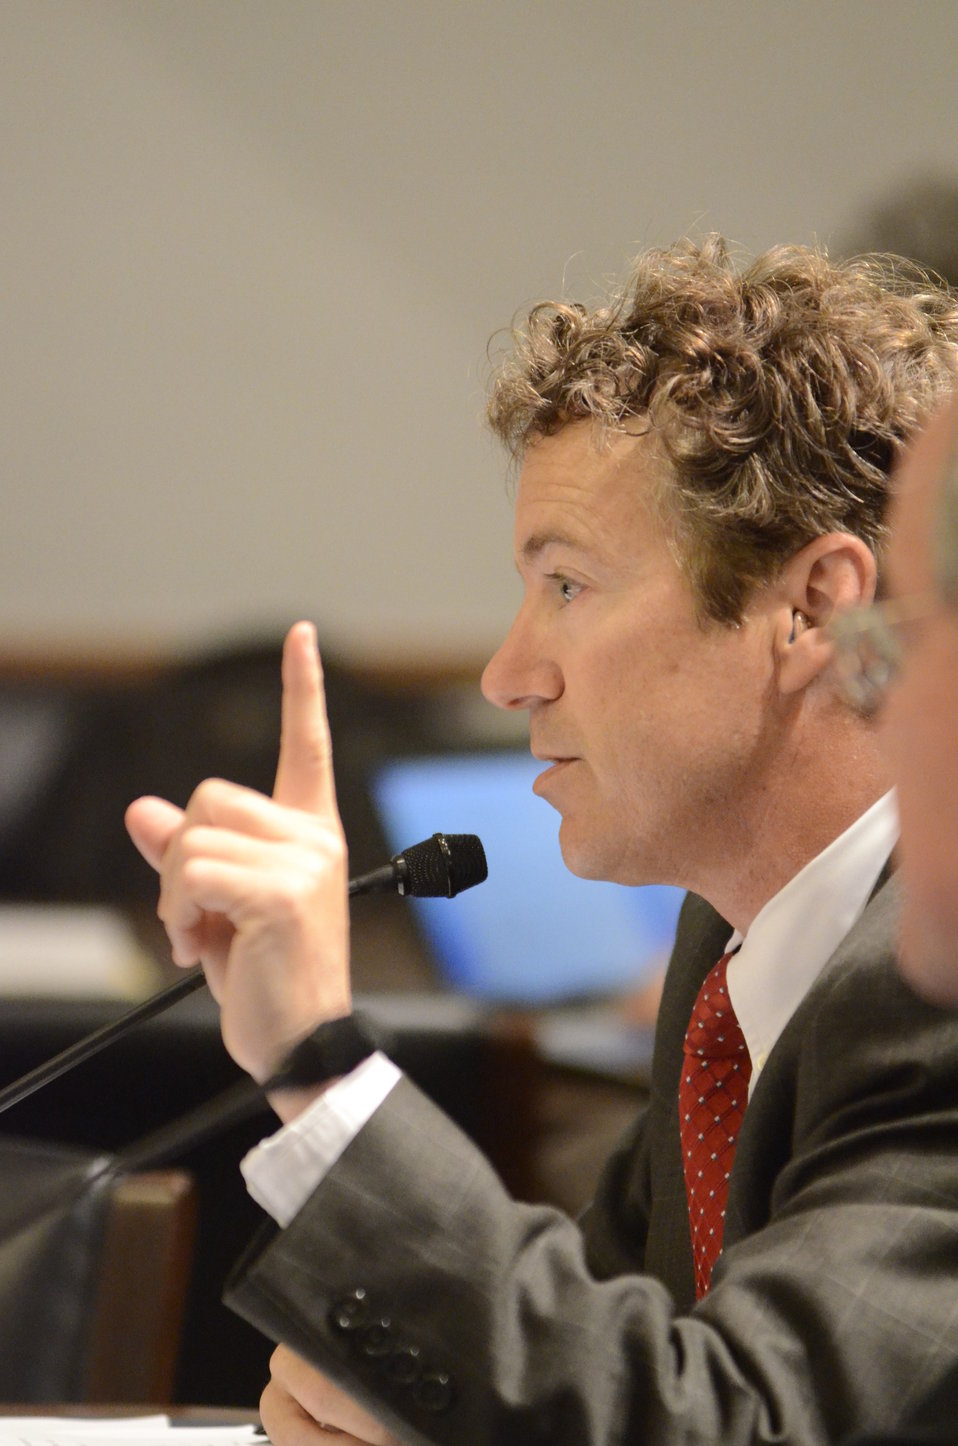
Senator Dr. Rand Paul (KY) testifies on Retailers & Entertainers Lacey Implementation & Enforcement Fairness Act & Freedom from Over-Criminalization & Unjust Seizures Act, at the Longworth House Office Building in Washington, D.C. on Tuesday, May 8, 2012.